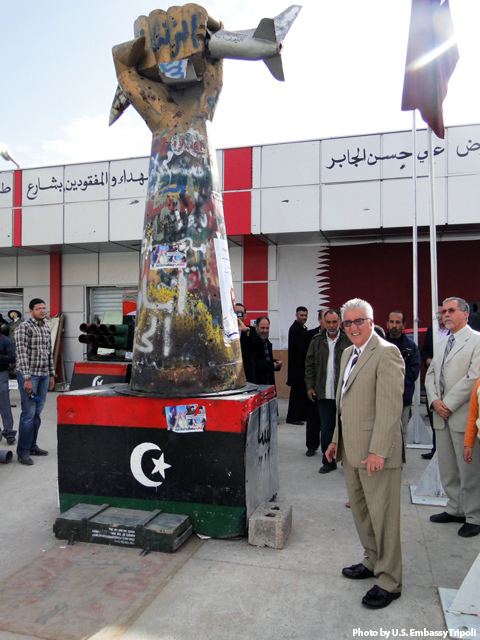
Ambassador Cretz Stands by the Statue That Represents the City's Central Role in the February 17 Revolution

U.S. Ambassador to Libya Gene Cretz stands by the iconic statue of a fist crushing an American warplane, which was long associated with Col. Qadhafi’s Bab AlAzizya compound in Tripoli, but now serves a symbol of the city’s central role in the February 17 Revolution in the center of Tripoli Street in Misurata, Libya, on November 26, 2011.